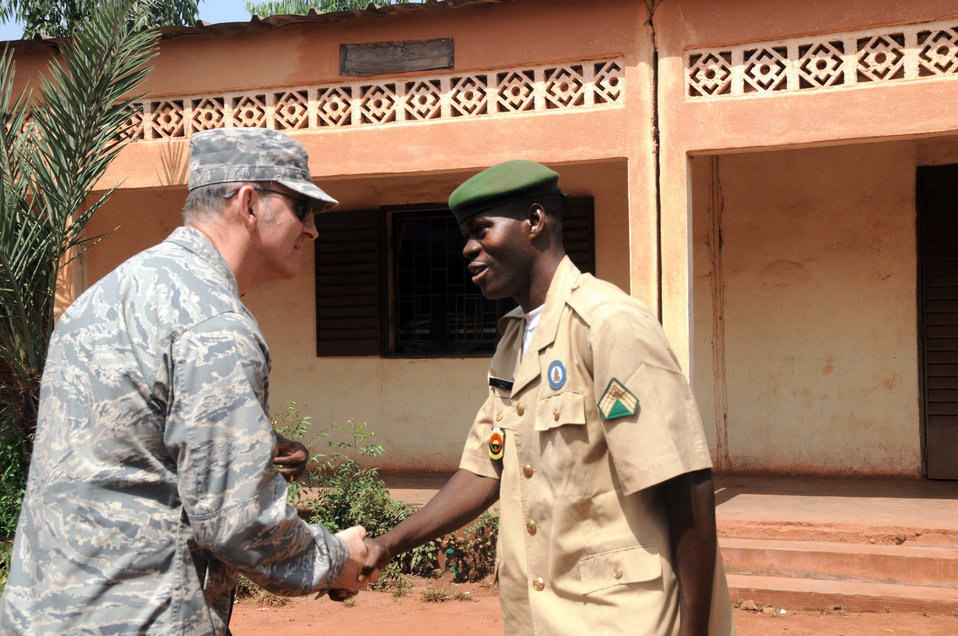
Malian forces improve proficiency at English language lab

Brig. Gen. Michael W. Callan meets Malian forces Staff Sgt. Niara Diallo during a senior leader engagement Oct. 27, 2009, in Bamako, Mali. General Callan is the 17th Air Force vice commander, and Sergeant Diallo is an English language instructor at the Mali Defense Force English Language Lab.